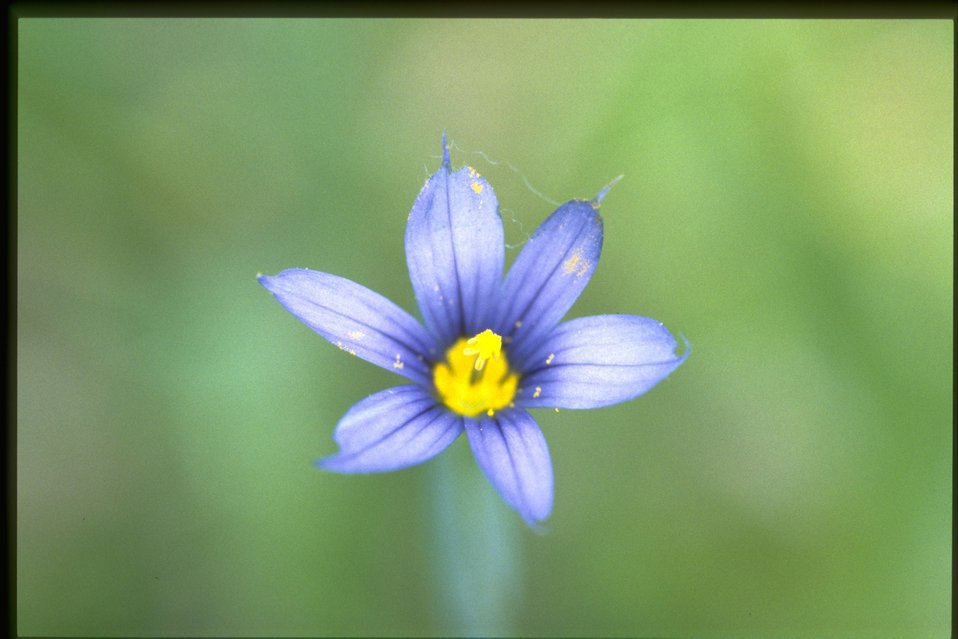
Closeup shot of Sisyrinchium idahoense.